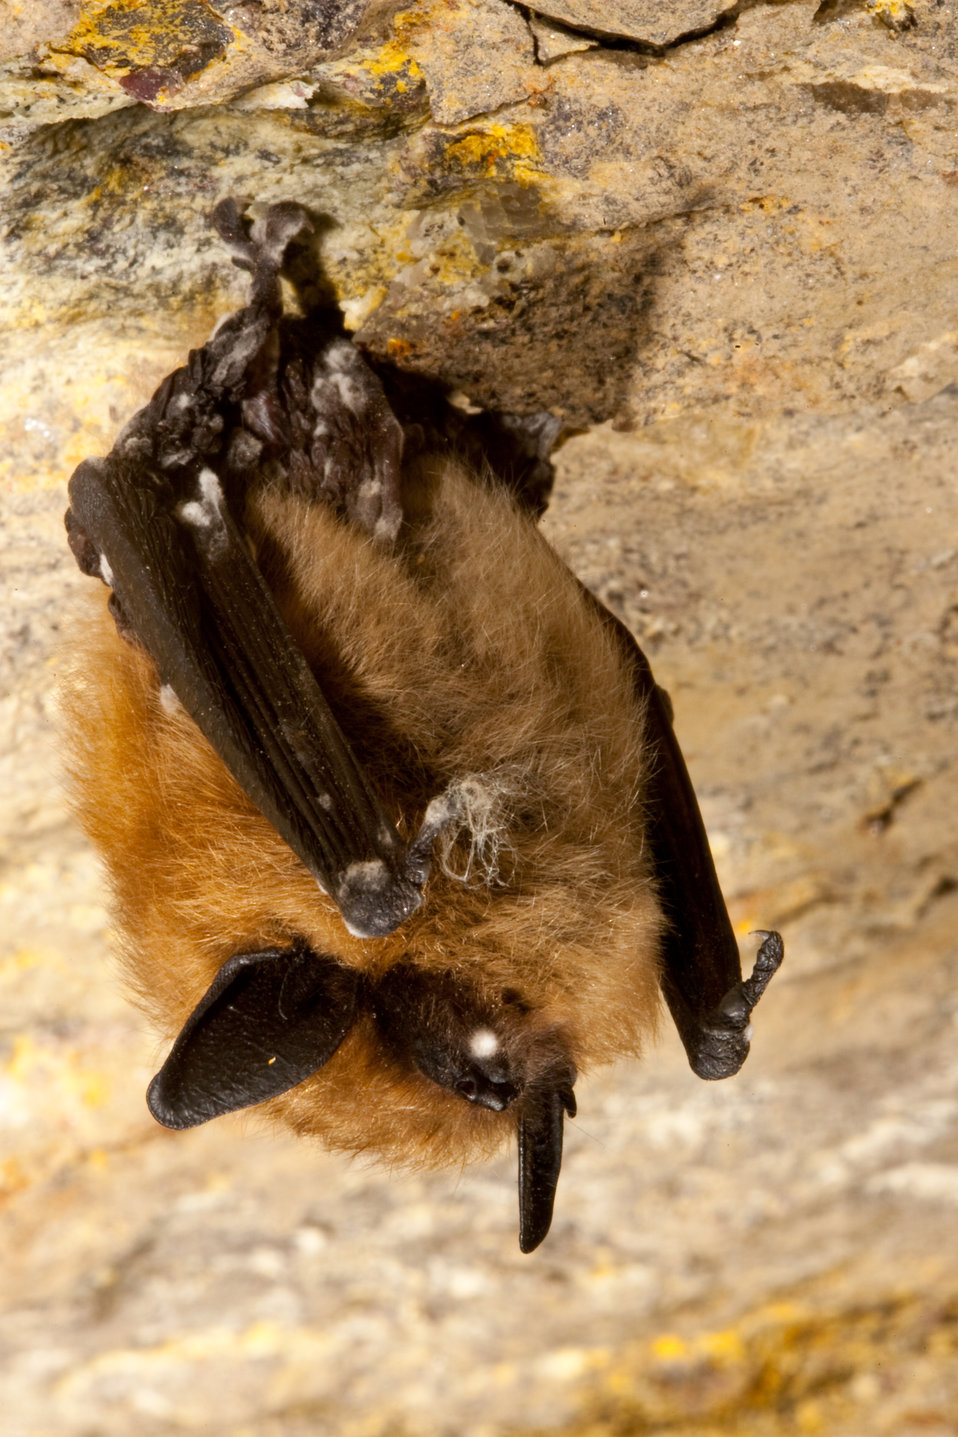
Eastern small-footed bat with white-nose syndrome

Myotis lebeii with white-nose syndrome